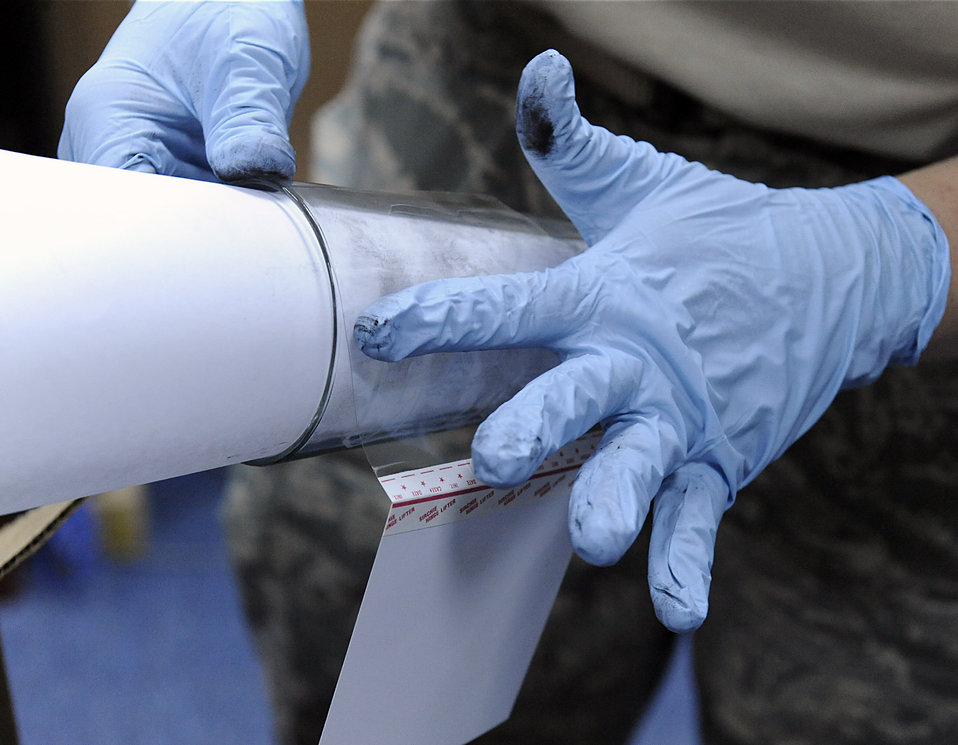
Practice keeps investigative skills sharp

Tech. Sgt. Kathy Trim lifts fingerprints from a glass April 11 at an air base in Southwest Asia. Once the fingerprints are lifted from the glass, they are sent to a lab to be cross referenced for any possible